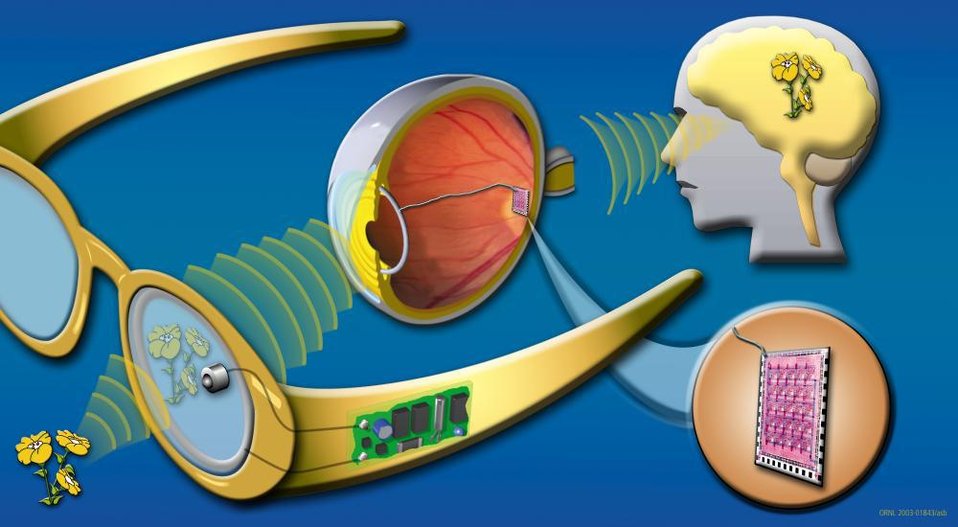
ARTIST'S RENDERING SHOWING HOW AN ARTIFICIAL RETINA WORKS.

DOE ESTABLISHED A MULTI-DISCIPLINARY COALITION OF DOE LABORATORIES AND INDUSTRY TO DEVELOP AN ARTIFICIAL RETINA. THE IMPLANT SHOWN HAS PIECES INSIDE AND OUTSIDE THE EYE. THE GLASSES HAVE A TINY CAMERA EMBEDDED IN THE LENS, WHICH CAPTURES IMAGES AND SENDS THE DATA TO A MICROPROCESSOR (INSIDE THE SIDE OF THE GLASSES) WHICH CONVERTS THE DATA TO AN ELECTRONIC SIGNAL. AN ANTENNA IN THE LENS SENDS THE SIGNAL TO AN ANTENNA IN THE EYE. THE SIGNAL THEN TRAVELS ALONG A TINY WIRE TO THE RETINAL IMPLANT, CAUSING THE IMPLANT TO STIMULATE THE REMAINING RETINAL CELLS WHICH SEND THE IMAGES ALONG THE OPTIC NERVE TO THE BRAIN.